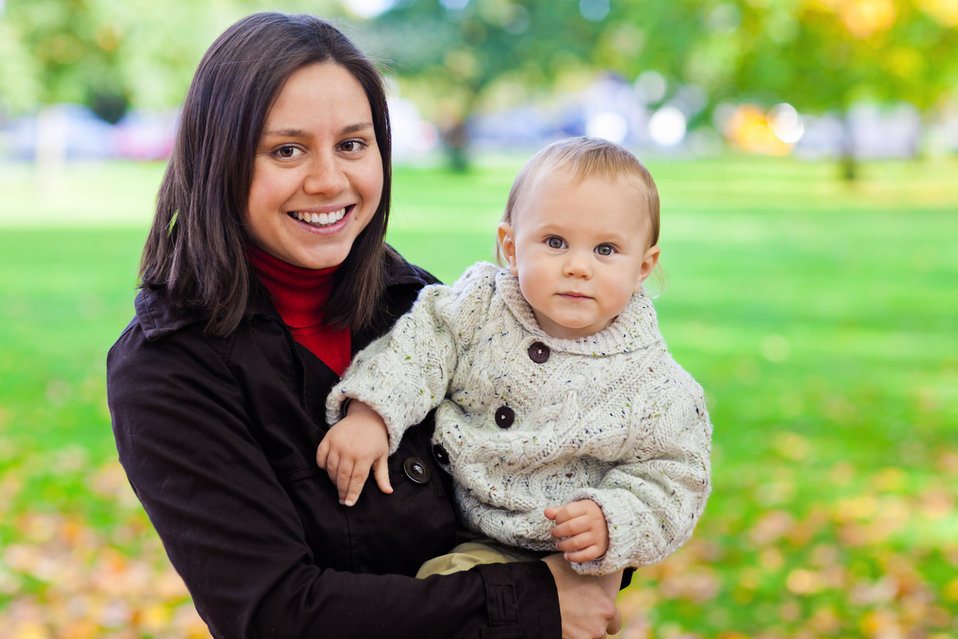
Mother and baby in park in autumn.